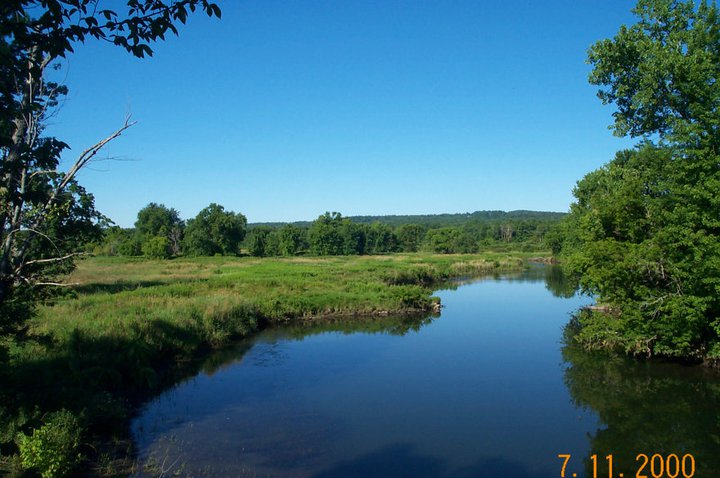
(Earlier photo) July 2000, Scenic Housatonic River